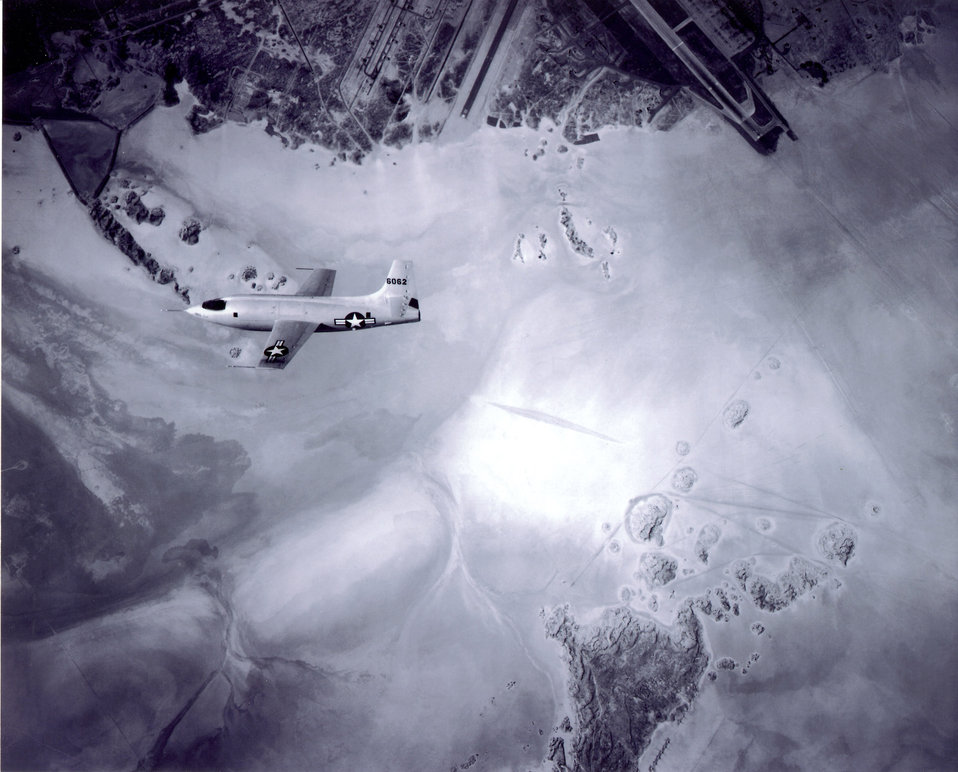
X-1

The Bell X-1 in flight over Rogers Dry Lake.